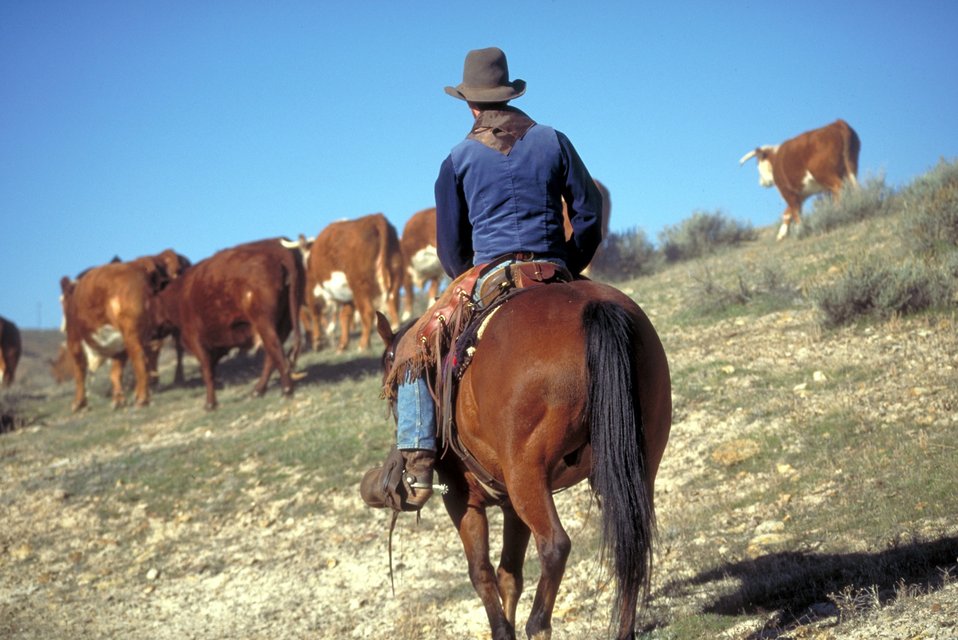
Working cowboys living near Vernal, Utah.